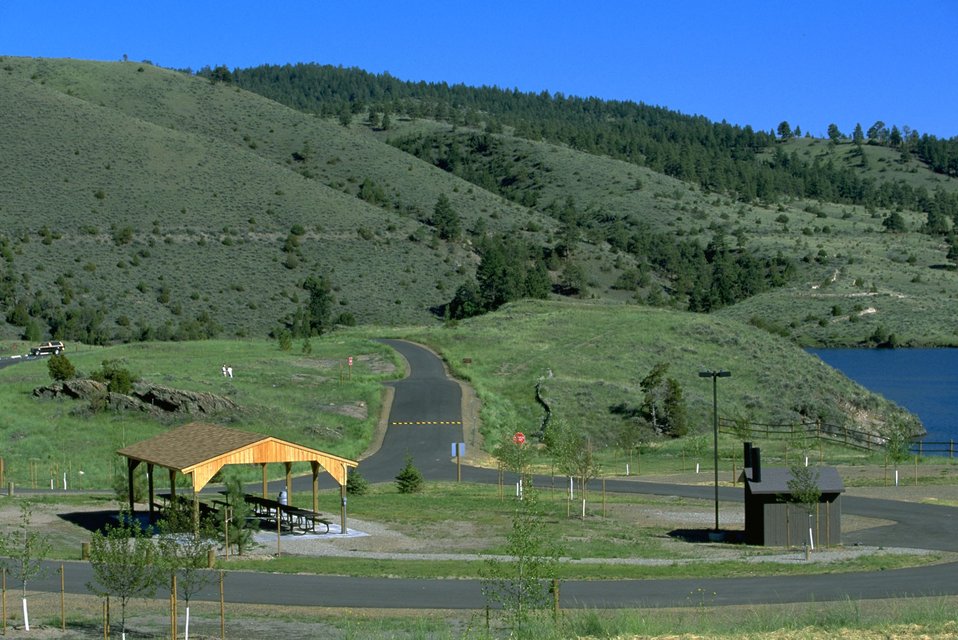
View of the covered picnic area (ramada) at Devils Elbow Campground